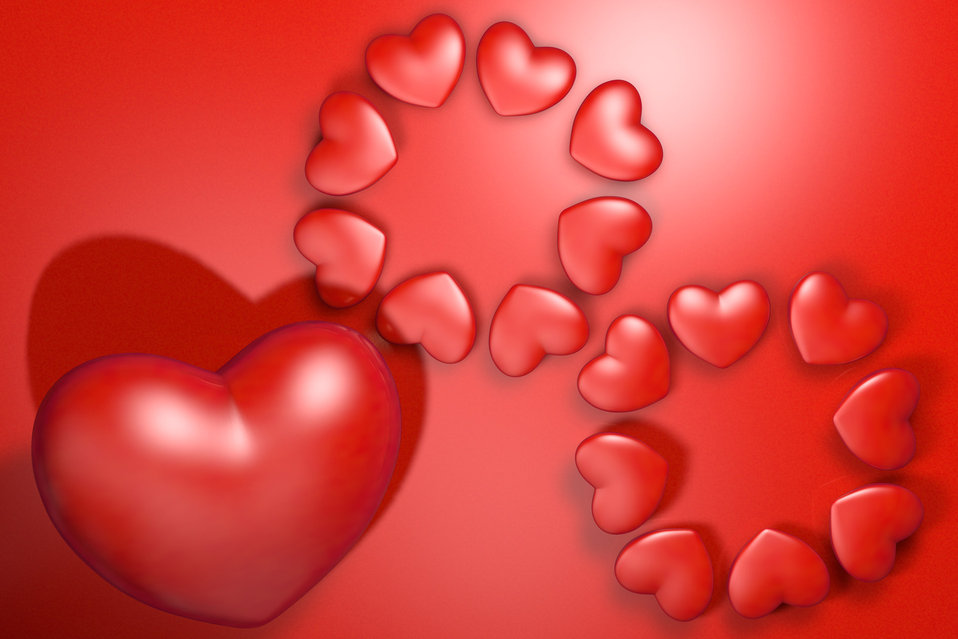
Background from hearts

Red background with hearts.